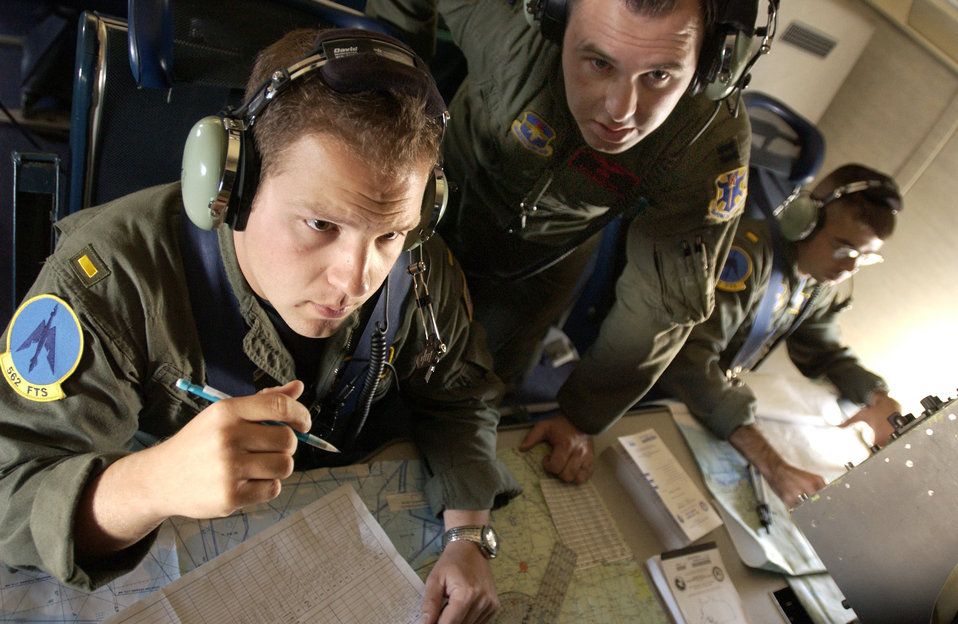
Navigation

RANDOLPH AIR FORCE BASE, Texas - Capt. Kelly Travis looks over the shoulder of Ensign Benjamin George as he instructs him in the navigation of an Air Force T-43. Captain Travis and Ensign George are assigned to the 562nd Flying Training Squadron.